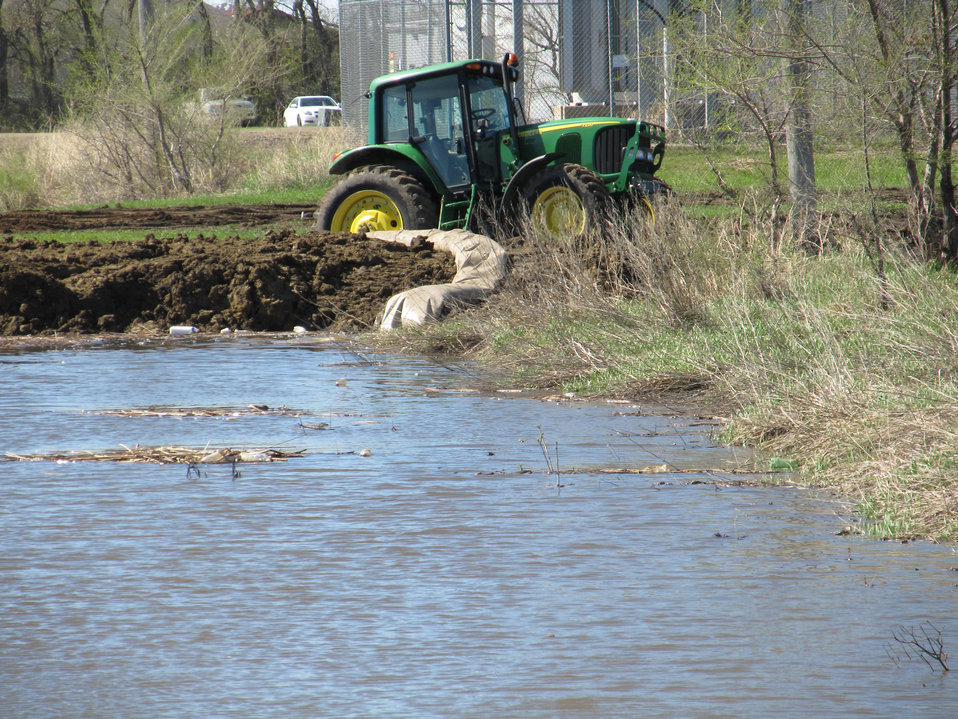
Flooding and water damage in the Park and Tongue River Watersheds located in Cavalier, Pembina and Cavalaier Counties in North Dakota on Thursday, May 23, 2013.